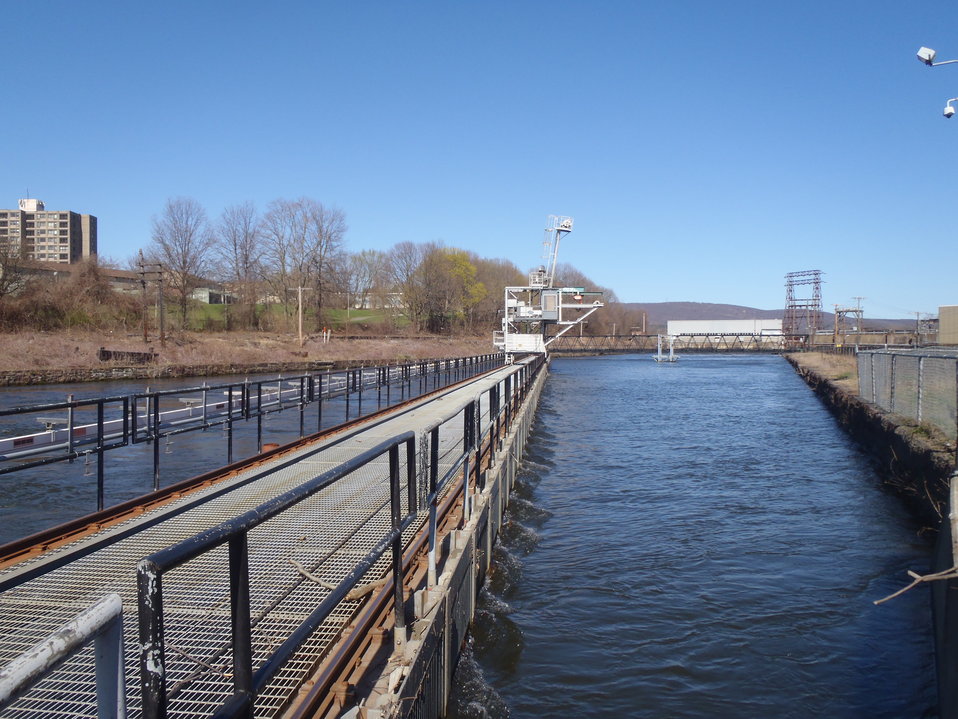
Fish guidance screen on CT River